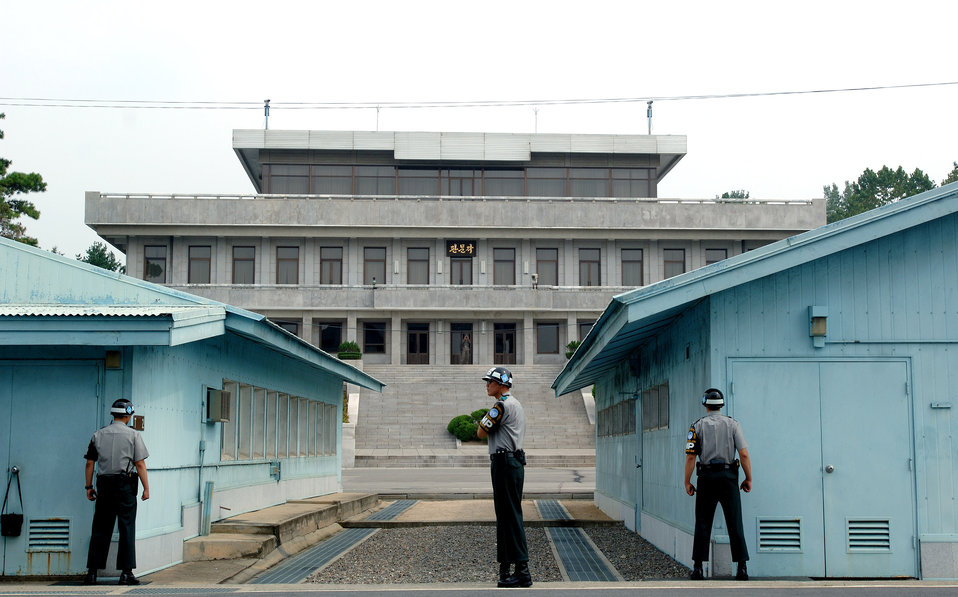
Korean War veterans leading different lives reunite

South Korean military police stand guard in the Korean Demilitarized Zone during a Sept. 13 tour held to honor Korean War veterans in Panmunjeom, South Korea. The joint security area is the only place where North and South connect. Air Force Korean War veterans were visiting South Korea during a weeklong tour in observance of the Air Force's 60th Anniversary.